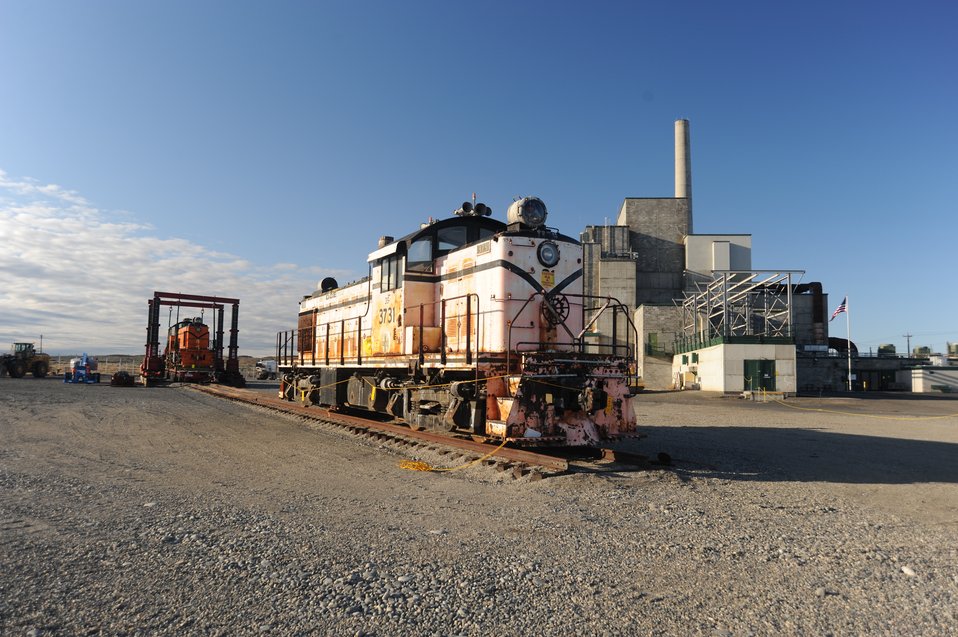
Recovery Act Invests in Cleanup, Preservation of Hanford Site Railroad

A remote-controlled, self-propelled trailer transports one of two locomotives to its final destination at the B Reactor, seven miles from where the engine had been stored.

In the recently completed railcar project — an effort funded by the Recovery Act — the Richland Operations Office and its contractors moved two locomotives and two cask cars onto reclaimed track at the B Reactor for permanent public display.